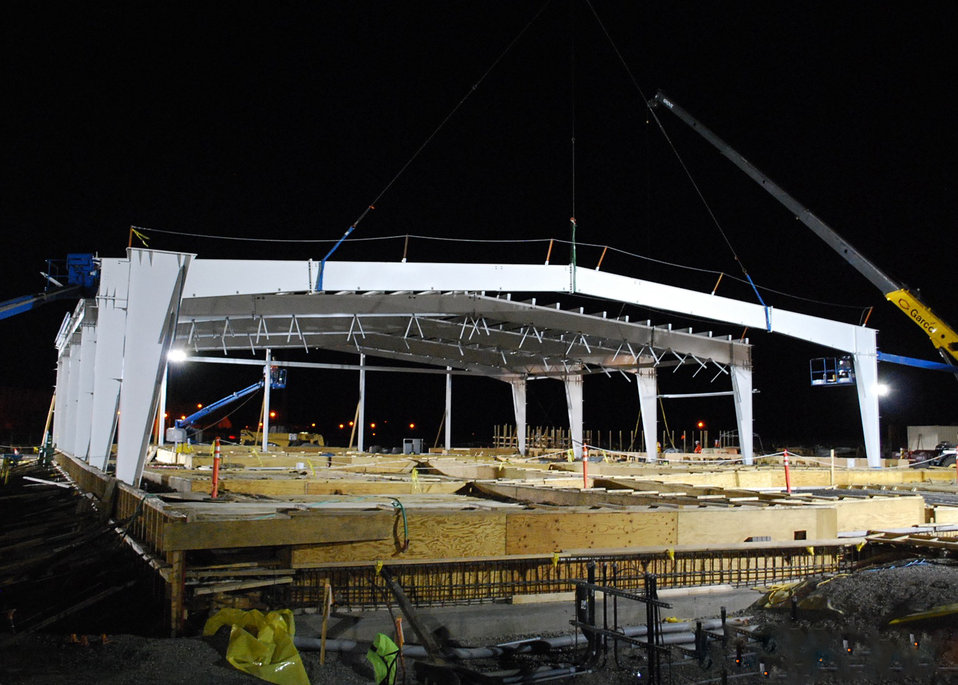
Hanford construction

Construction of the structural steel for the Radiological Building continues. The building is one of two main process buildings that will make up the 200 West Groundwater Treatment Facility.